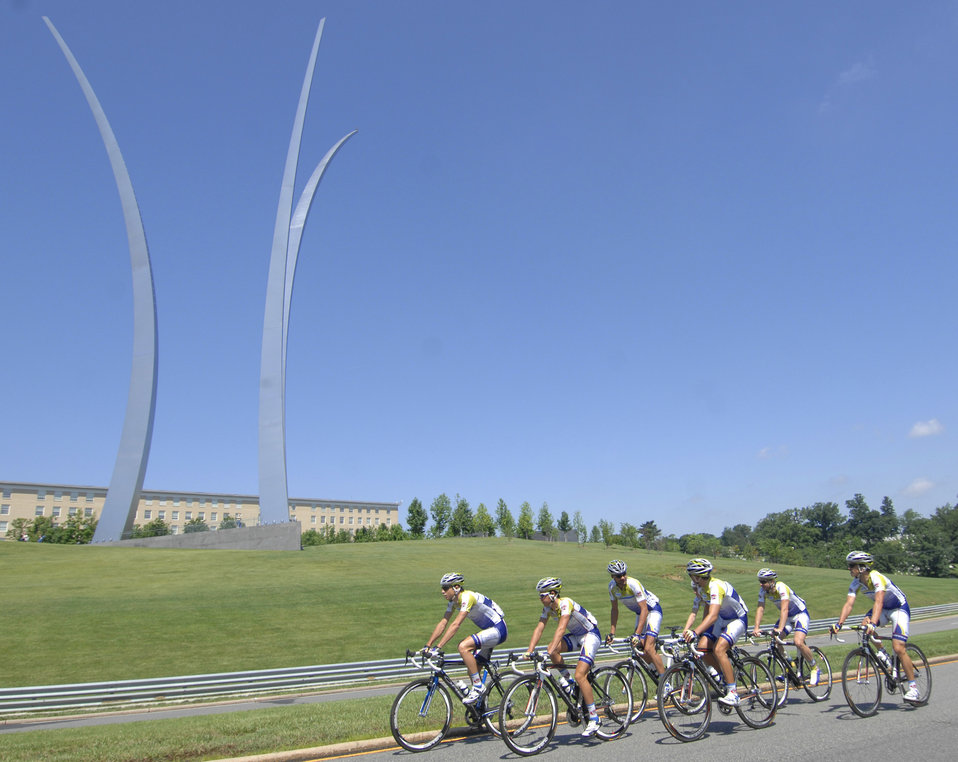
Biking for wounded warriors

Riders pass the Air Force Memorial during the 2009 Air Force Cycling Classic May 31 in Arlington, Va. Nearly 1,000 professional and amateur riders participated in the annual, two-day bicycling event, raising $34,500 for the Intrepid Fallen Heroes Fund charity.